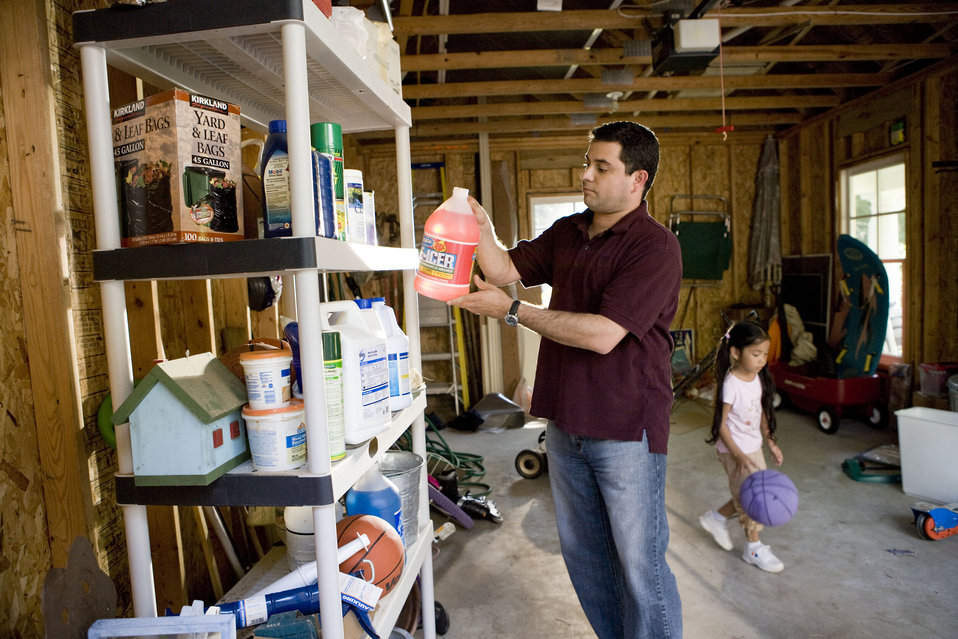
Here we see a father organizing his garage contents, while in the background, his young daughter was playing with her purple basketball.